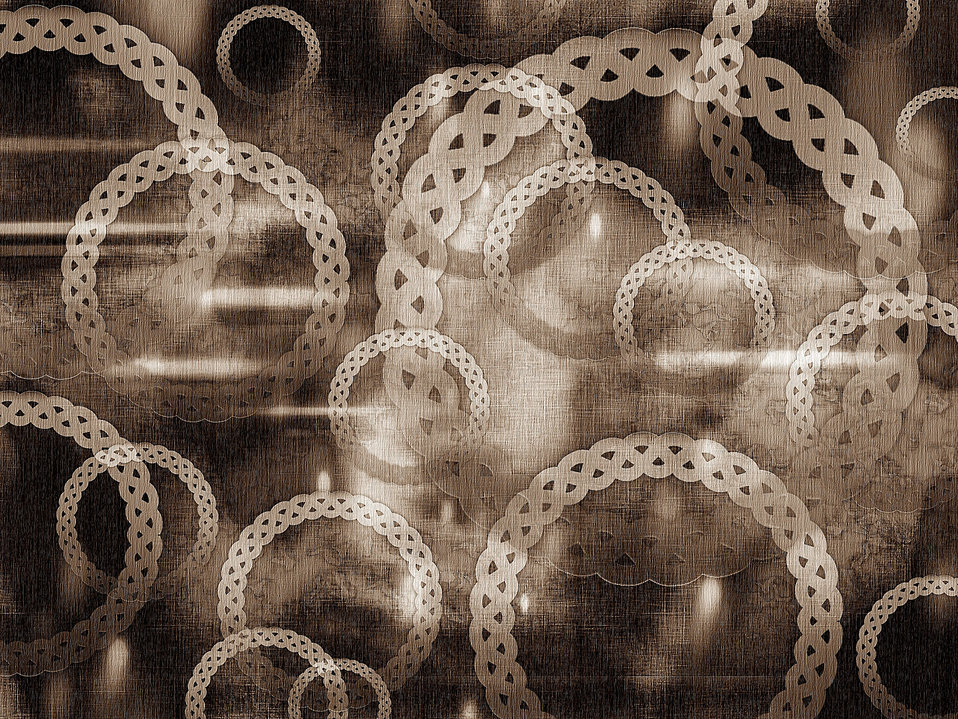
Background 272

Background.